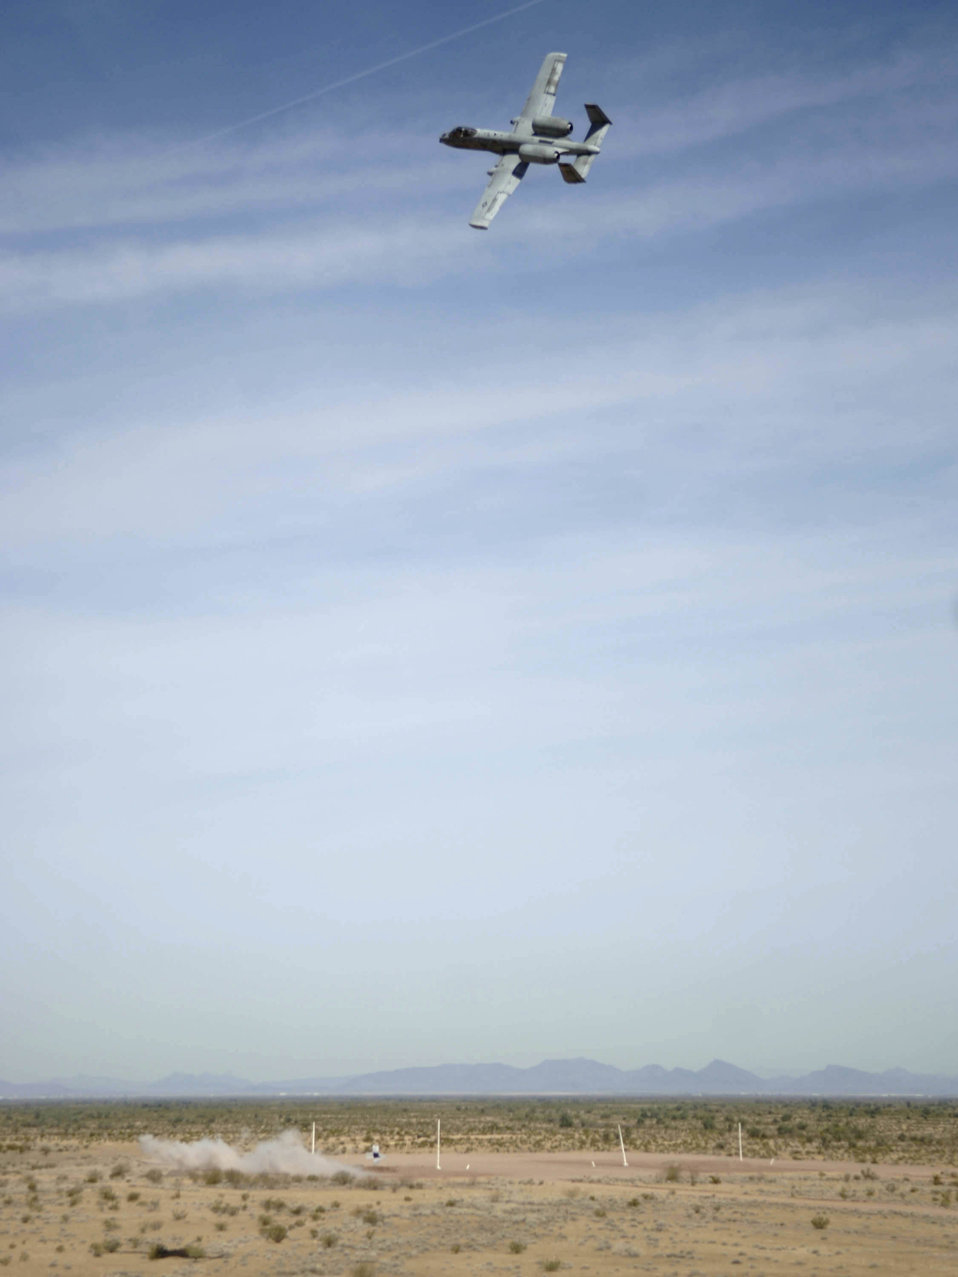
Thunder alley

An A-10 Thunderbolt II, flies over the targets after firing its 30mm gun at a low angle strafe, as part of the 2006 Hawgsmoke competition, Thursday, March 23, 2006, at the Barry-Goldwater Range, Gila Bend Air Force Auxiliary Field. There are four parts of the competition, and each team has four members in which they have 100 bullets each to use towards the target. This year's competition coincides with the 30th anniversary of the